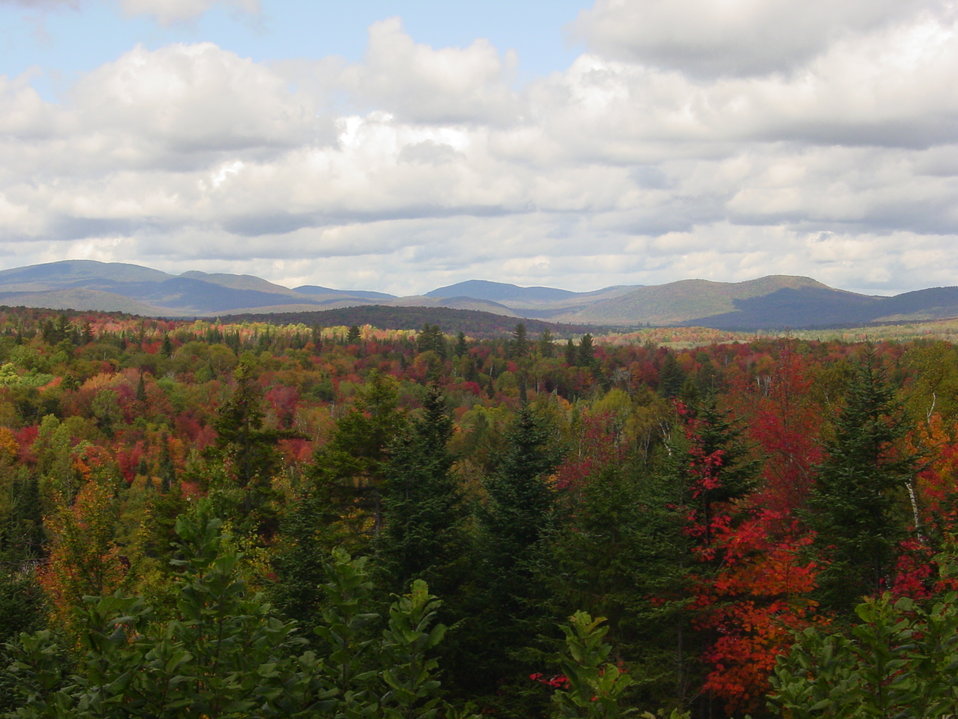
Fall Foliage

Nulhegan Basin Division, Silvio O. Conte National Wildlife Refuge.